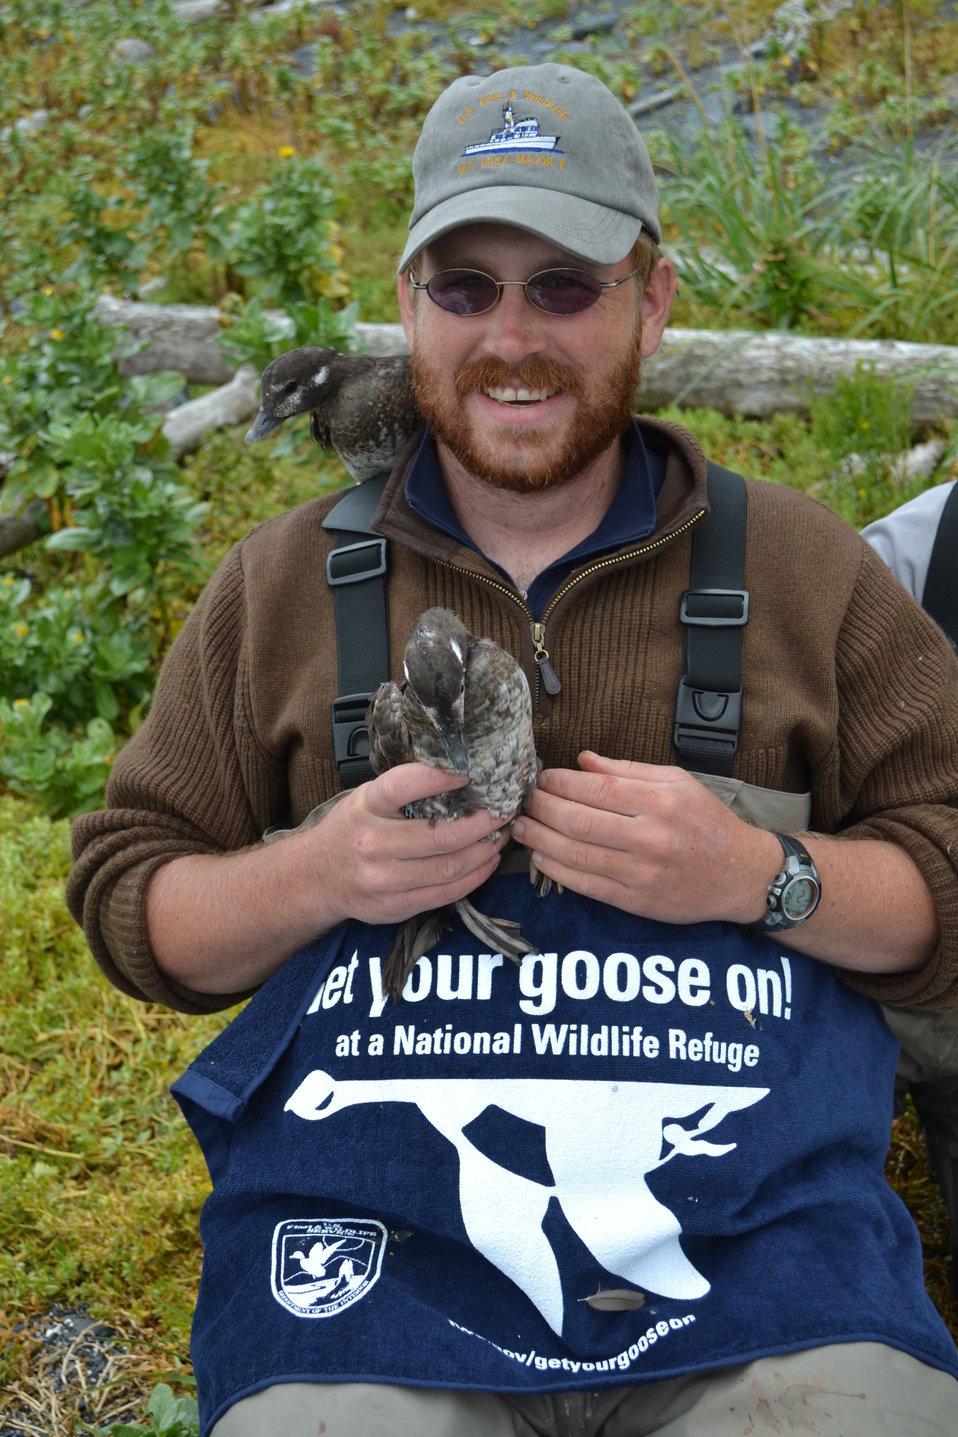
Get Your Goose On! - Alaska Style

USFWS Environmental Contaminants Biologisit Micah Miller with Harlequin Ducks

Credit: Katharine Studholme / USFWS

The Kodiak National Wildlife Refuge is a United States National Wildlife Refuge in the Kodiak Archipelago in southwestern Alaska, United States.

The Kodiak National Wildlife Refuge includes the southwestern two-thirds of Kodiak Island, Uganik Island, the Red Peaks area of Afognak Island and all of Ban Island in the archipelago. It encompasses 1,990,418 acres (8,054.94 km2).[2] The refuge is administered from offices in Kodiak.

The refuge contains seven major rivers and about 100 streams. It is a spawning ground for all six species of Pacific Ocean salmon, trout and several other fish species, as well as a nesting ground for 250 species of bird, many of which feed on salmon. The refuge has only six native species of mammals: Kodiak brown bear, red fox, river otter, ermine, little brown bat and tundra vole. The non-native mammals Sitka deer, mountain goat, Roosevelt elk, snowshoe hare and beaver were introduced to the archipelago between the 1920s and 1950s and are now hunted and trapped.

The climate of the refuge is that of southern Alaska, mild and rainy. Many areas in the refuge are densely forested with Sitka Spruce at lower elevations. There are grasslands in drier areas and at higher elevations. The refuge contains several small glaciers.